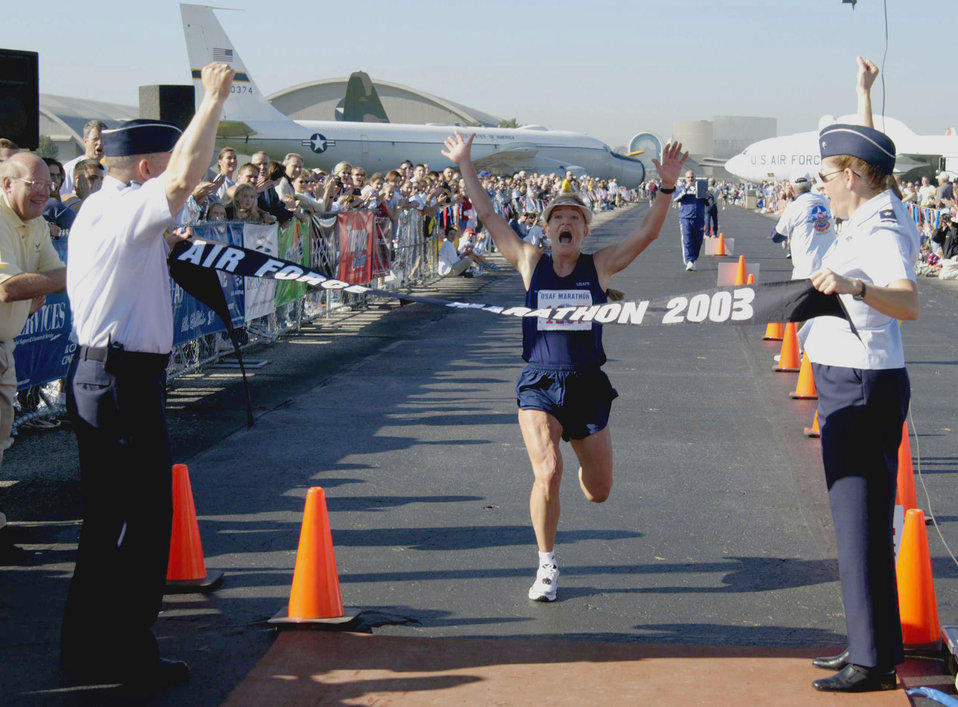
Marathon

WRIGHT-PATTERSON AIR FORCE BASE, Ohio (AFPN) -- Lt. Gen. Dick Reynolds, Aeronautical Systems Center commander, and Brig. Gen. Ro Bailey, ASC Aeronautical Enterprise Program director, cheer Jill Metzger as she finishes the 26.2-mile Air Force Marathon. Metzger was the overall top women's finalist at 3 hours, 5 minutes and 35 seconds.